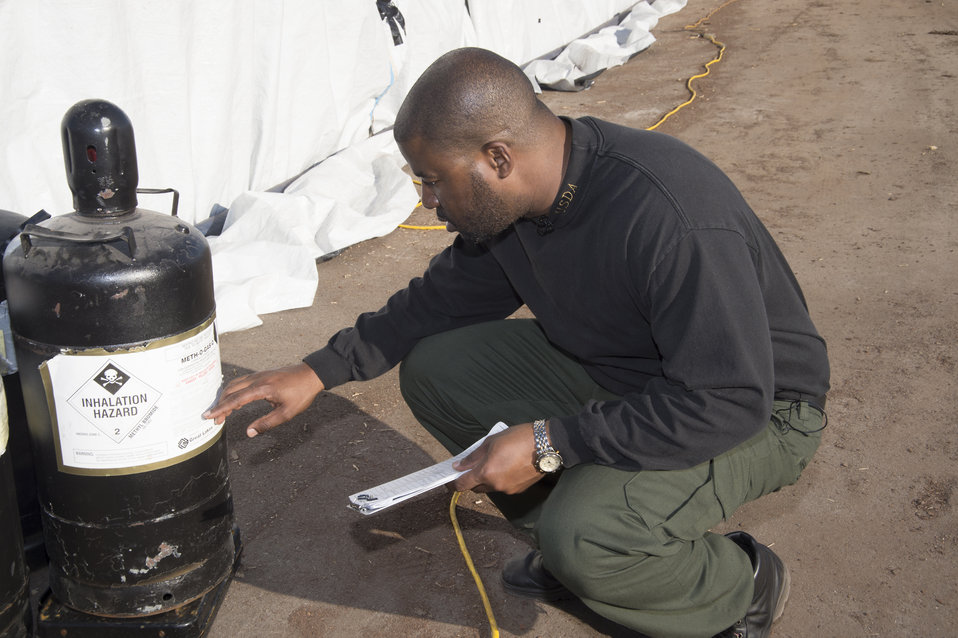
U.S. Department of Agriculture’s (USDA) Animal and Plant Health Inspection Service (APHIS) employee examines the fumigaion tent used on U.S. logs for export near the Port of New Orleans in New Orleans, LA on Wednesday, Nov. 20, 2013. The fumigation process prevents the spread of any bacteria or insect that might cause harm to a foreign country’s agriculture.